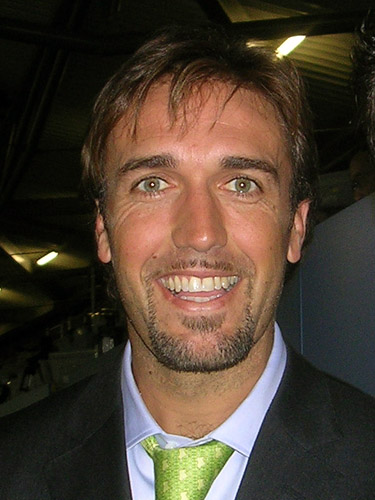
Gabriel batistuta